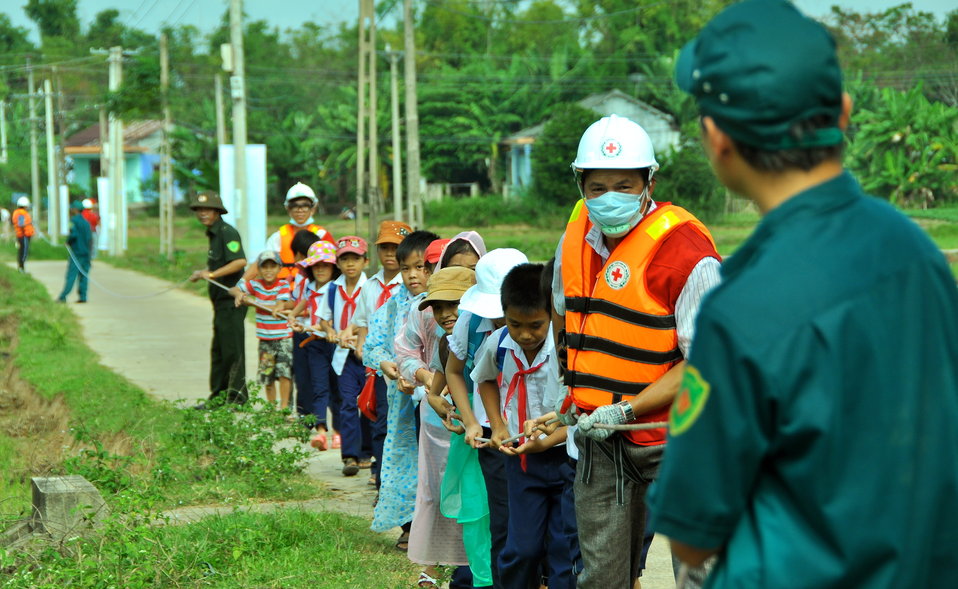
USAID, Red Cross Support Disaster Response Drill in Duy Hoa Commune, Quang Nam Province

Duy Hoa Commune, Quang Nam Province
December 5, 2012